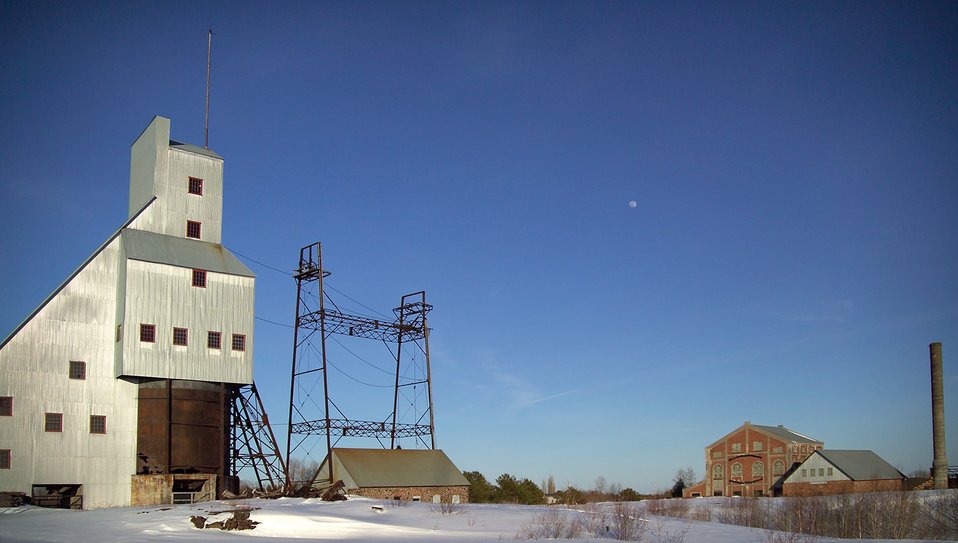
Quincy Copper Mine. Keweenaw Peninsula, Lake Superior